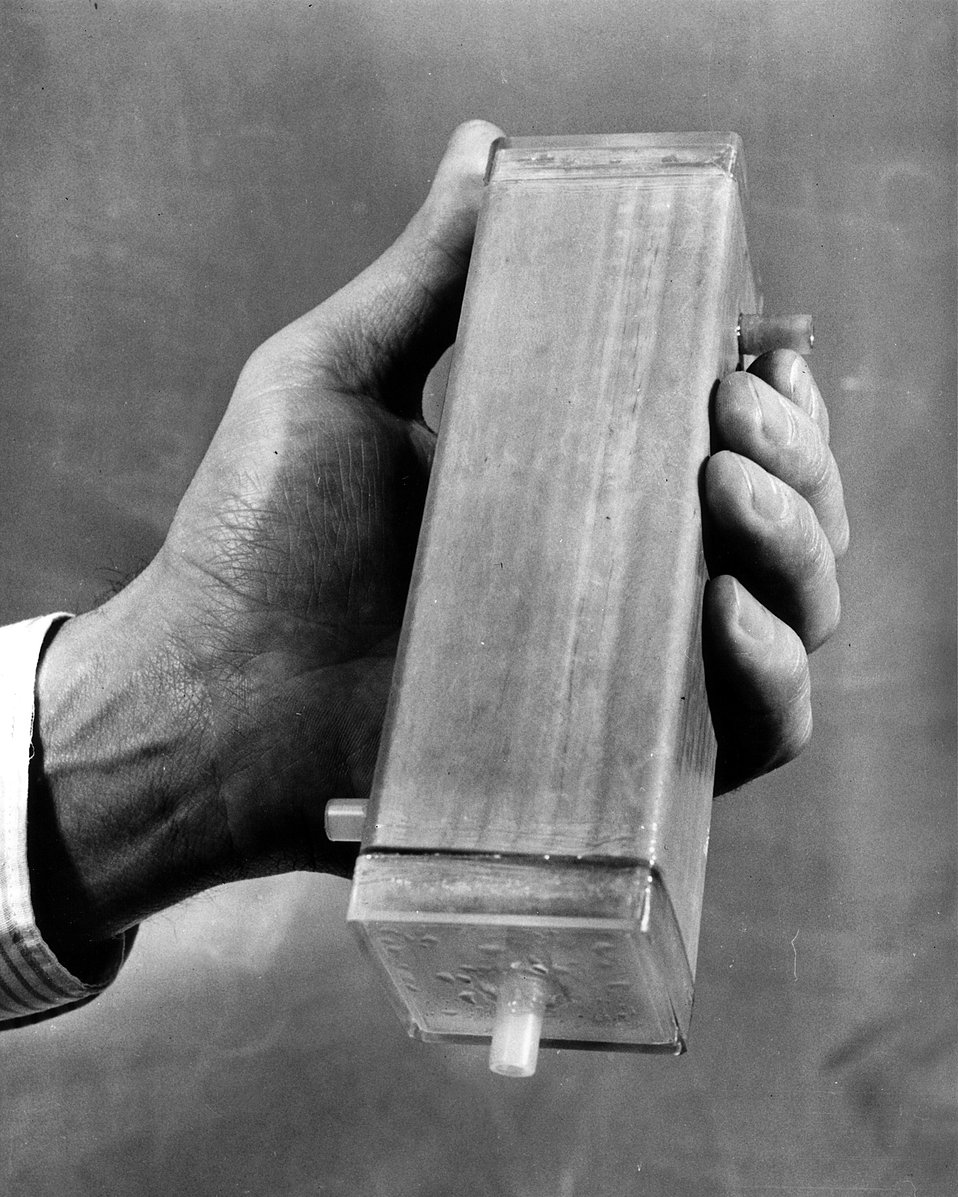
An early prototype of the artificial kidney which is being developed at Argonne through an interagency agreement between AEC and the National Institutes of Health.
c.1969